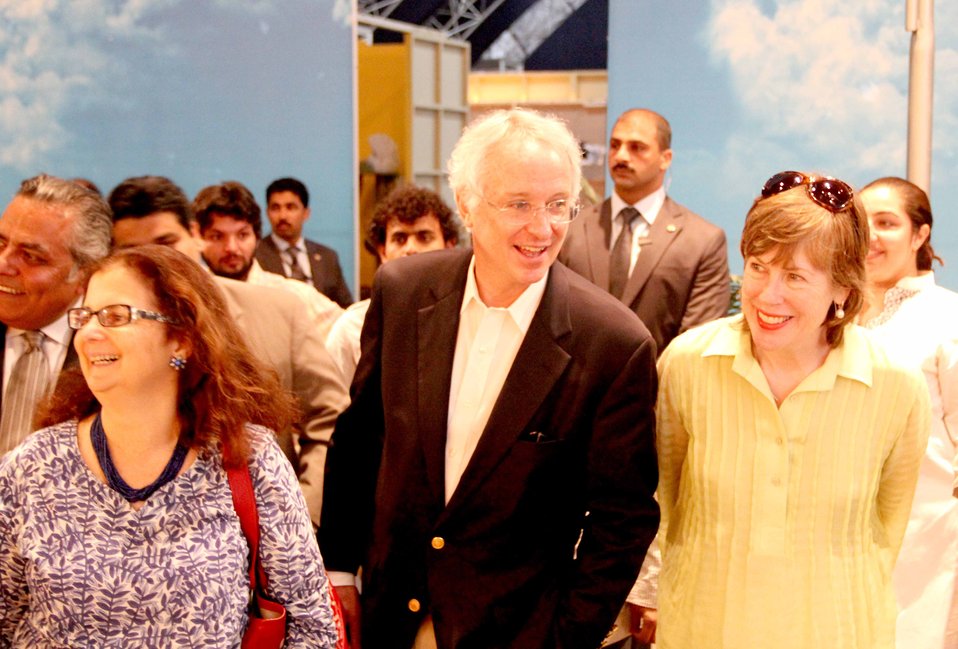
U.S. Ambassador’s Visit to Sim Sim Hamara Highlights U.S. Commitment to Improved Children’s Education in Pakistan at Lahore on 28 April, 2012

Mr. Cameron Munter and his wife Dr. Marliyn Wyatt